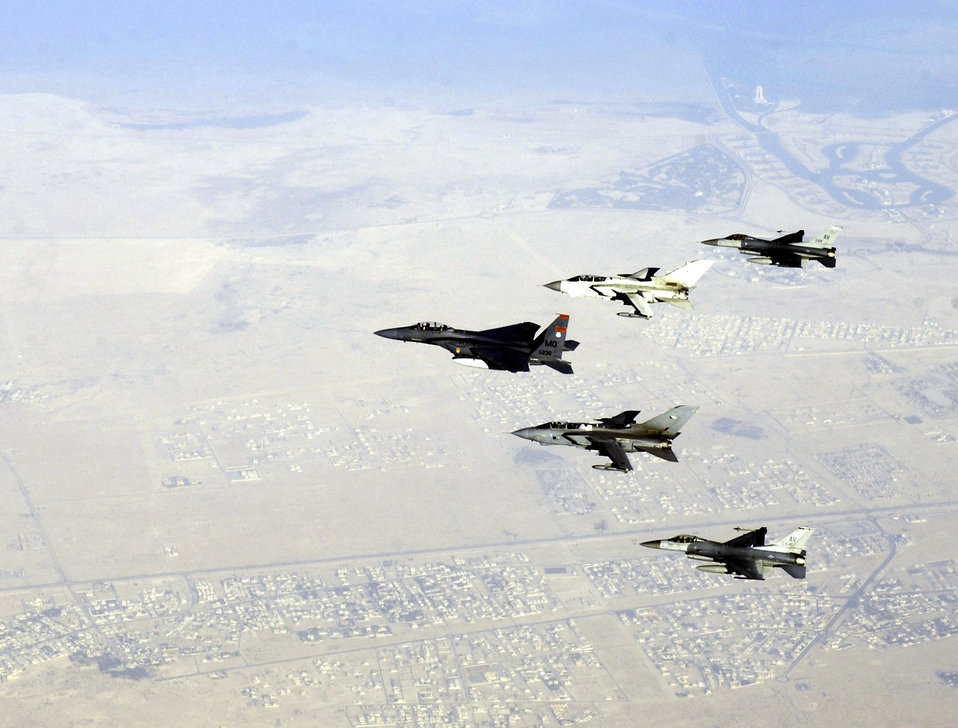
Formation flying

OVER SOUTHWEST ASIA -- An F-15 Strike Eagle leads a formation of two F-16 Fighting Falcons and two British GR4 Tornados on Dec. 29. The aircraft and crews are supporting operations here.